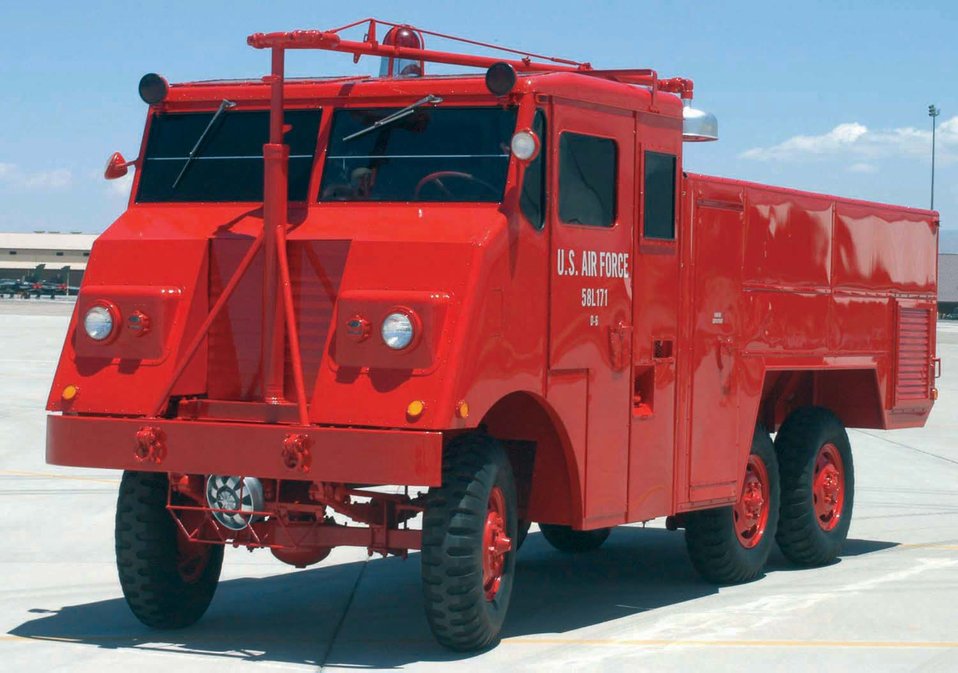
Firefighting history

HOLLOMAN AIR FORCE BASE, N.M. -- This 1958 O-6 Cardox fire crash truck was completely restored by 49th Civil Engineer Squadron fire and emergency services department people here recently. They presented it to the military firefighter's heritage museum at Goodfellow Air Force Base, Texas, during a dedication ceremony May 18.